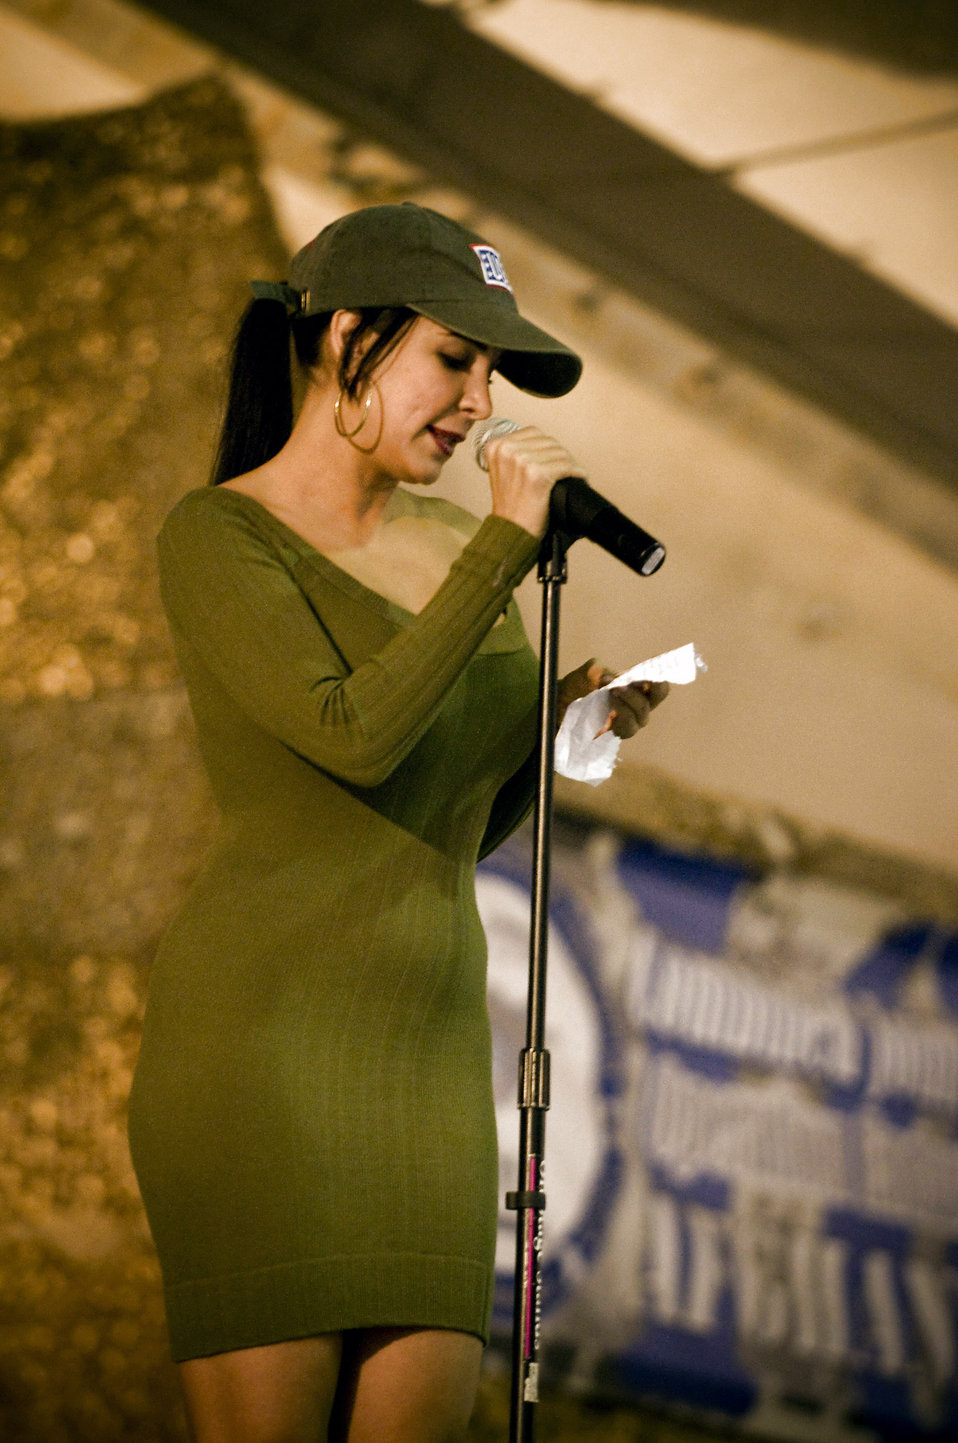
Around the world in 8 days

Mayra Veronica reads a tribute to the troops before singing